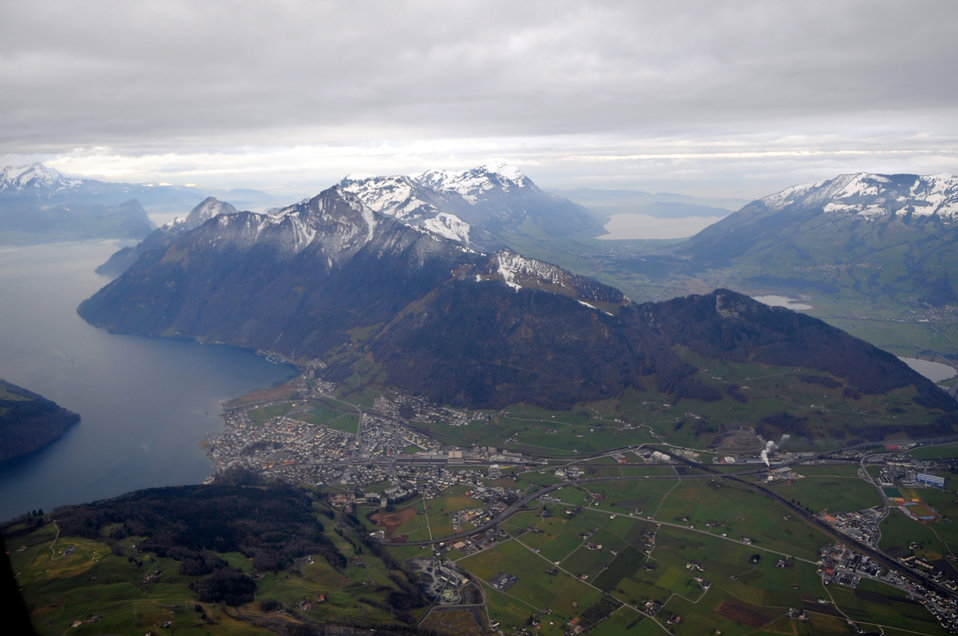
Swiss Landscape as Seen From Secretary Kerry's Helicopter on Flight to Davos

The Swiss landscape as it appeared from the helicopter carrying U.S. Secretary of State John Kerry on a flight from Montreux to Davos, Switzerland, on January 23, 2014.